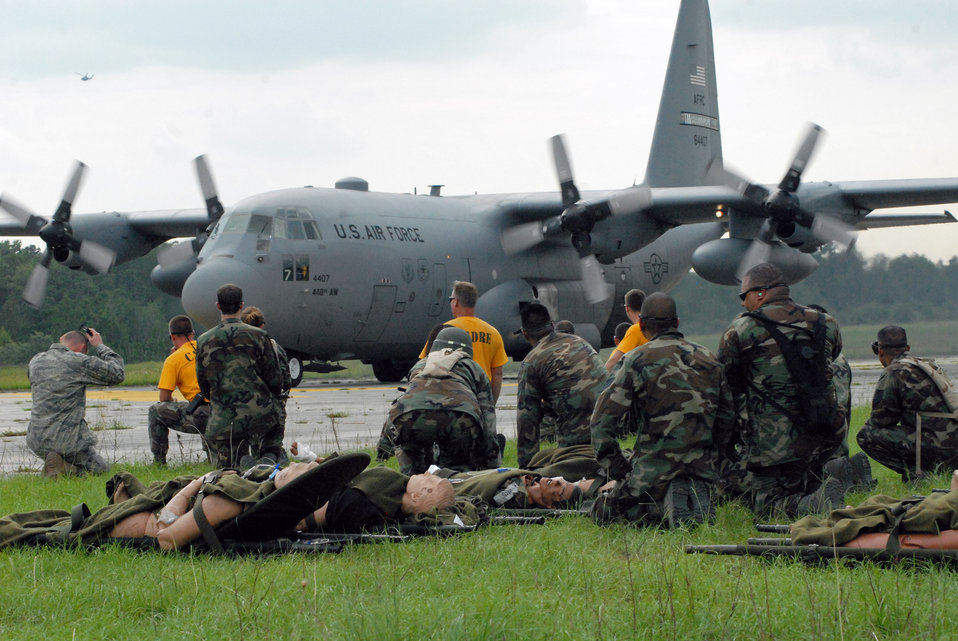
Pope's AES trains Travis Airmen for deployment

Airmen from the 60th Medical Group at Travis Air Force Base, Calif., and instructors from the 43rd Aeromedical Evacuation Squadron at Pope Air Force Base, N.C., prepare to load litters on an approaching C-130H during mobile aeromedical staging facility training at Fort Bragg's Camp Mackall, N.C., July 10.